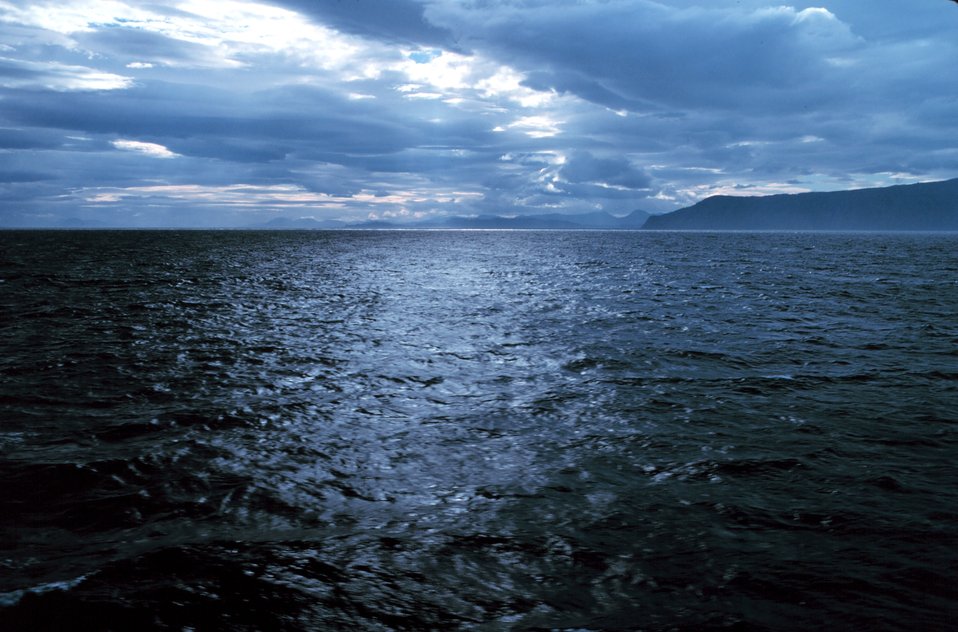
Dramatic cloud formation over the Puale Bay area of the Alaska Peninsula.